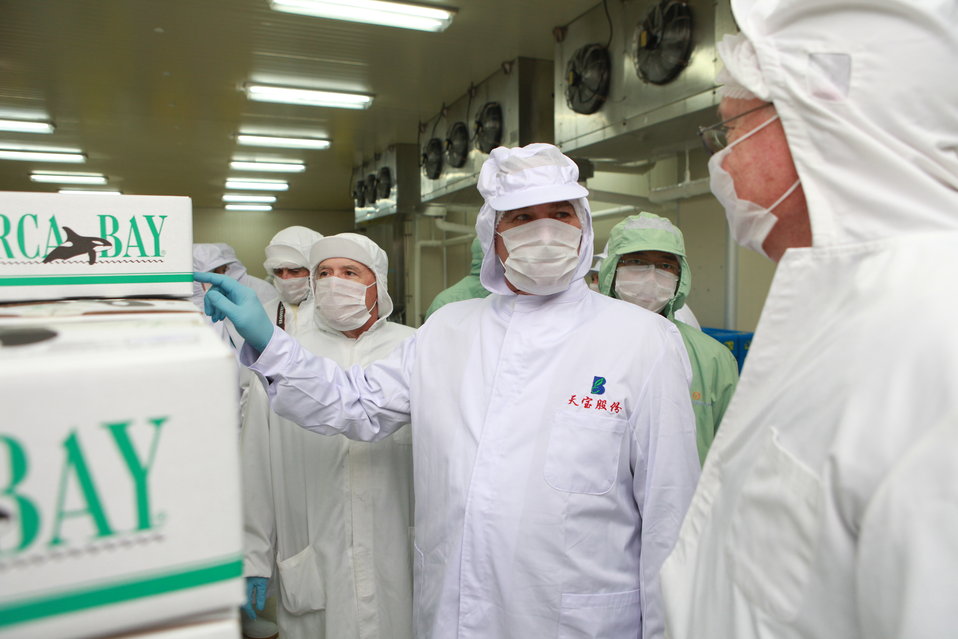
U.S. Department of Agriculture (USDA) Farm and Foreign Agricultural Services (FFAS) Under Secretary Michael Scuse tours a seafood processing operation at Tianbao in China on May 6, 2004. Tianbao is a Chinese company that imports large amounts of seafood, dairy, and fruit products from the U.S.